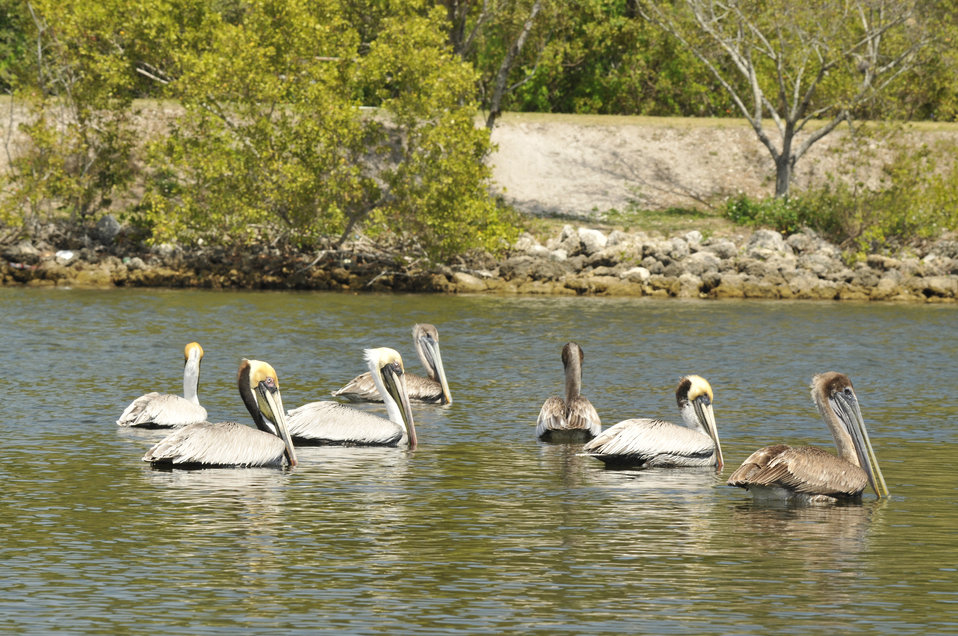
Brown Pelicans swim in Biscayne Bay National Park, in southern Florida on April 5, 2010. The Brown Pelican (Pelecanus occidentalis) is the smallest of the eight species of pelicans and is distinguished from the American White Pelican by its brown body and its habit of diving for fish from the air, as opposed to co-operative fishing from the surface. It eats mainly fish and amphibians as well as crustaceans.